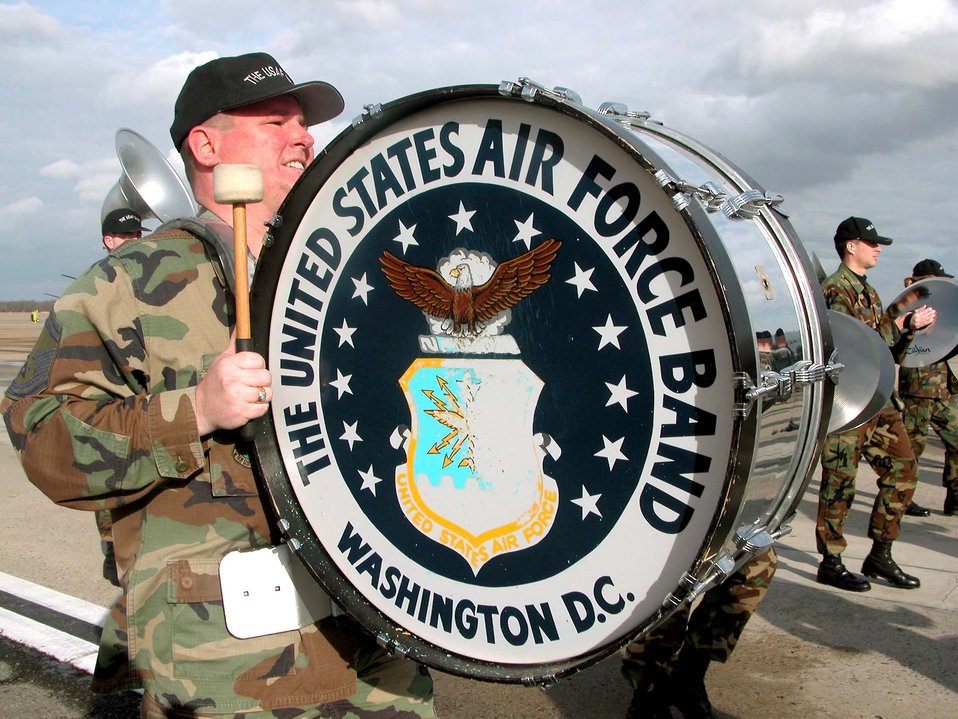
Air Force Band ready for inauguration

ANDREWS AIR FORCE BASE, Md. -- Senior Master Sgt. Patrick Shrieves practices with fellow bandsmen here Jan. 13. A 20-year veteran, Sergeant Shrieves has played at five presidential inaugurations, and this year's event may be his final parade because he is contemplating retirement.